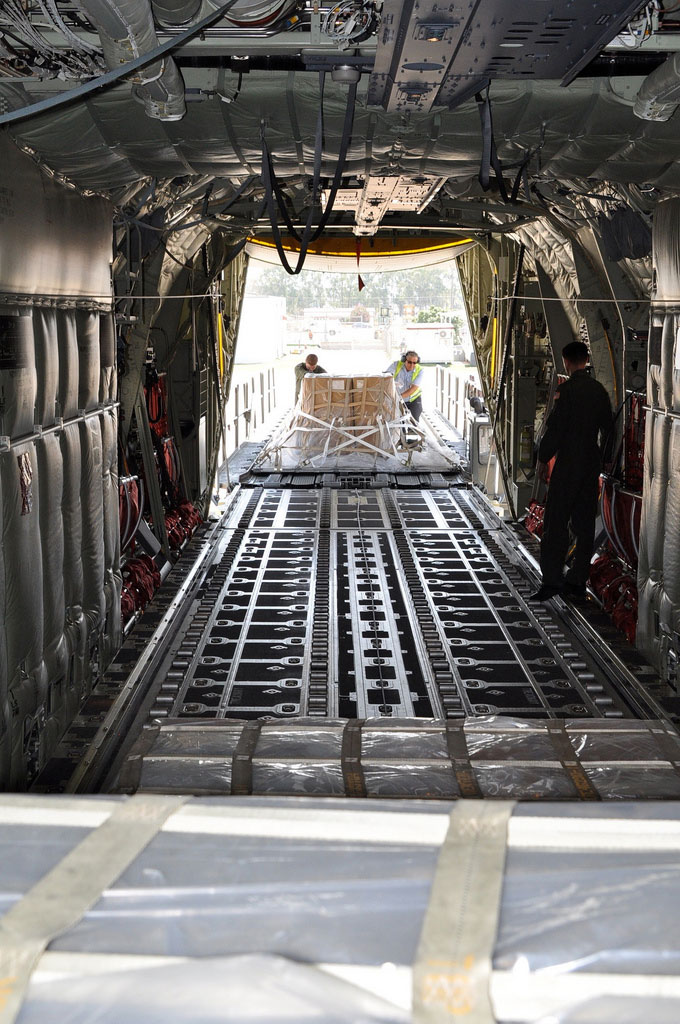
Senior Airman Steve Baird III and a Spanish Employee from Interjet Load a Pallet of Firefighting Equipment

Senior Airman Steve Baird III, a loadmaster from the 37th Air Lift Squadron out of Ramstein, Germany, and a Spanish employee from InterJet at Naval Station Rota, load a pallet of firefighting equipment onto a C-130 in Rota, Spain, on August 12, 2010. NAVSTA Rota sent nearly $20,000 of equipment to help Russia control and extinguish wildfires, save lives, homes, infrastructure, and natural resources.